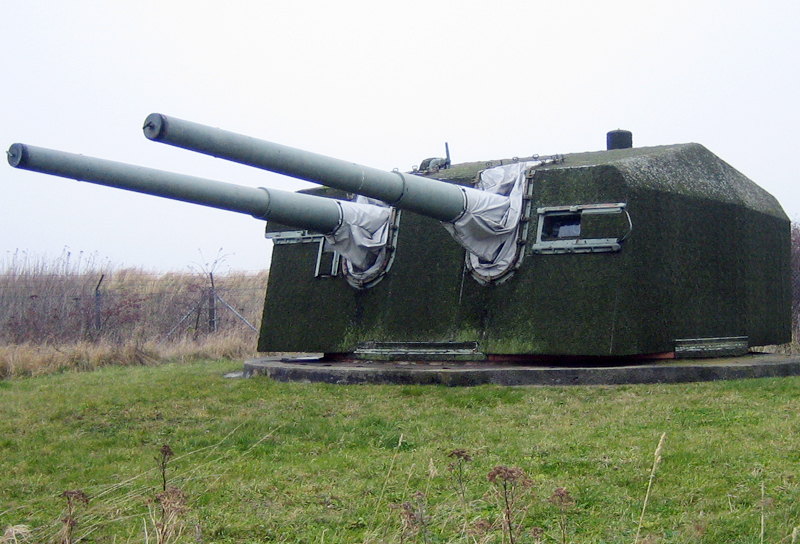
Dansk: Dåbbelttårn fra Gneisenau - Stevns Cannon on Stevns, Denmark, taken from the German battleship Gneisenau